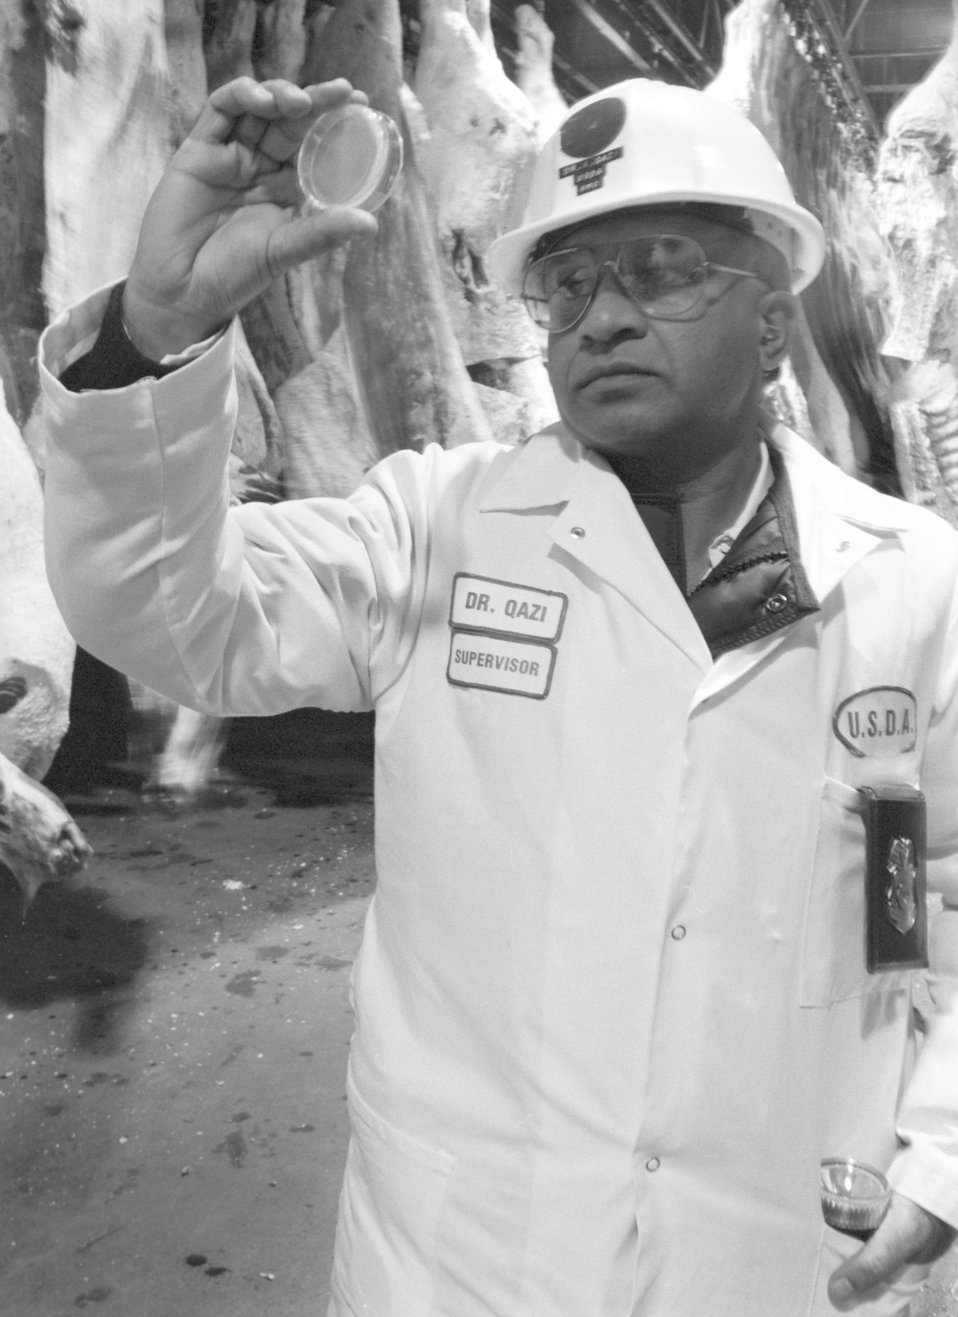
U.S. Department of Agriculture (USDA) Food Safety Inspection Service (FSIS) inspectors inspect beef using a Streamline Inspection System (SIS) at a processing plant in Plainview, TX on January 22, 1991.